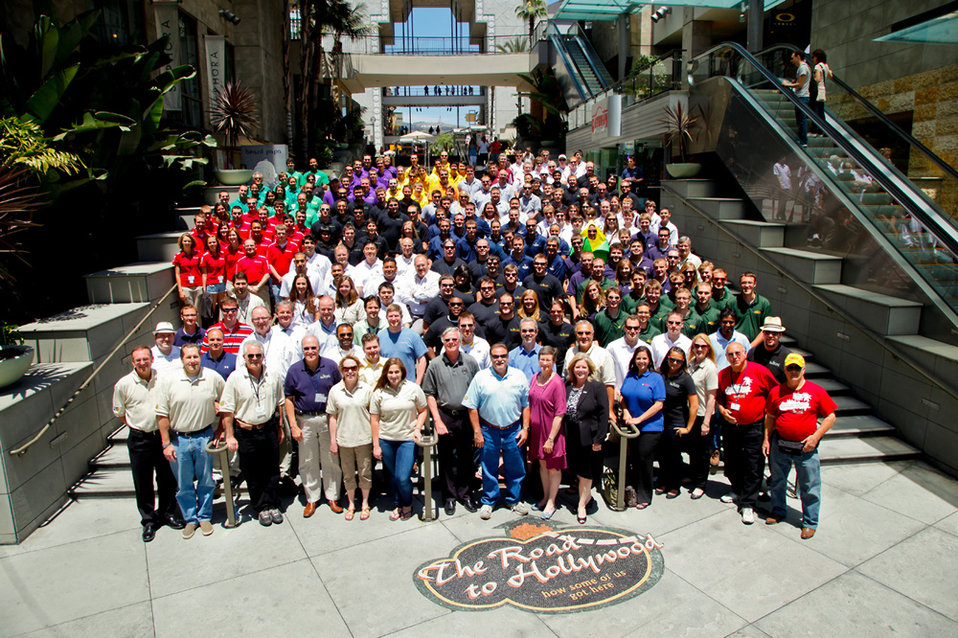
EcoCAR 2 is a three-year competition that challenges 15 universities from across North America to reduce the environmental impact of a 2013 Chevrolet Malibu by minimizing the vehicle's fuel consumption and reducing its emissions while retaining the vehicle's performance, safety, and consumer appeal. | Photo courtesy of EcoCAR 2.